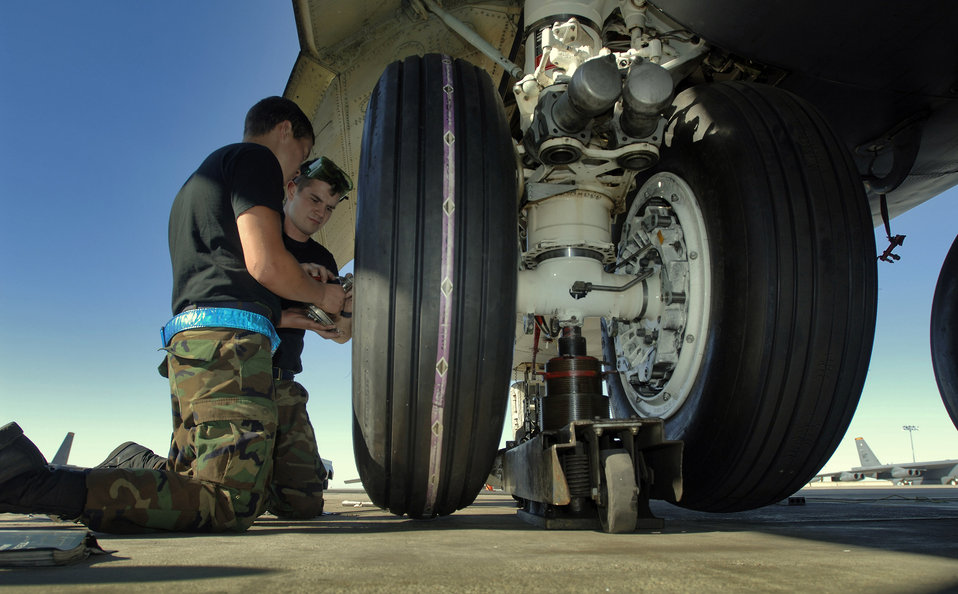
B-52 operations

Airman Eric Andreasen (left) and Senior Airman Michael Schaff change a tire on a B-52 Stratofortress at Minot Air Force Base, N.D., Aug. 21. The Airmen are from the 5th Aircraft Maintenance Squadron at Minot AFB.